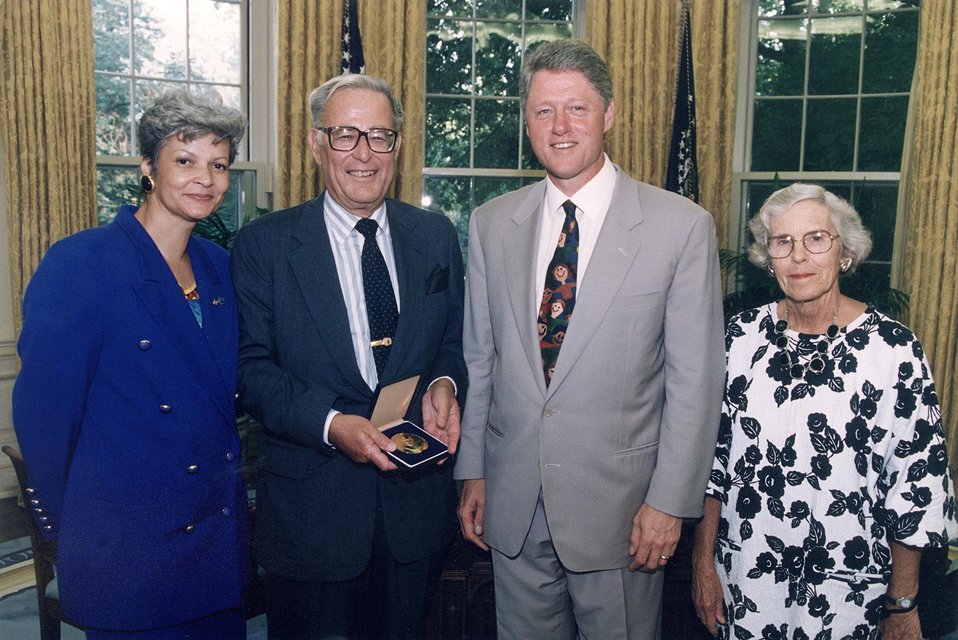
Left to right:. Secretary of Energy Hazel R. O'Leary, Dr. Harold Brown, President William Clinton and Mrs. Harold Brown.